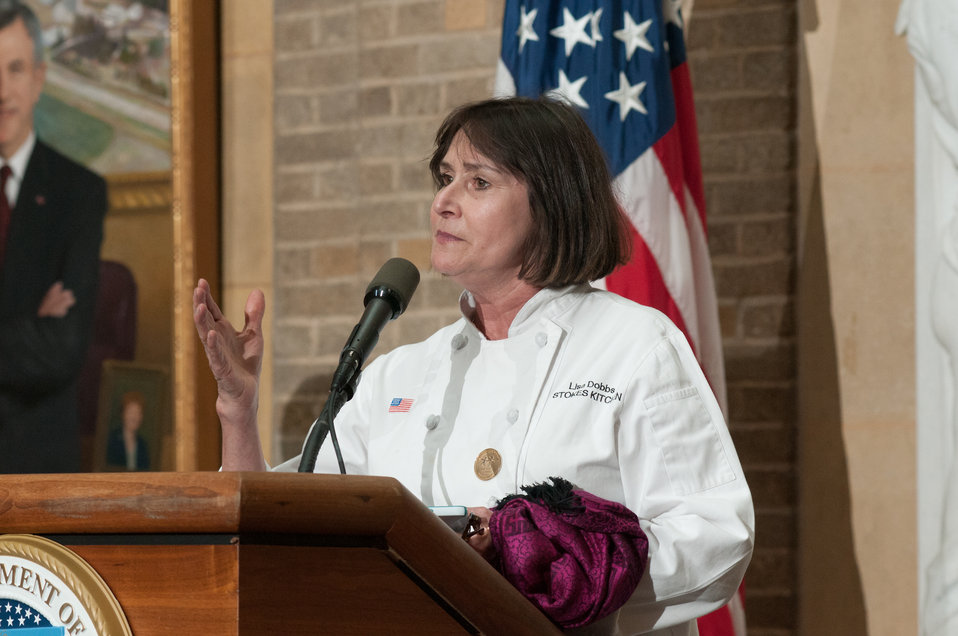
E.W. Stokes Charter School Chef and Nutrition Director Lisa Dobbs talks about what extended shelf life dairy products means to the more than 350 Washington, D.C. students that her staff feeds each school day, and what it means to controlling the operational budget of a cafeteria that cooks everything from scratch at a luncheon with dairy producers, Dairy Management, Inc., (DMI) and other stakeholders from the dairy producers industry, , at the Whitten Building Patio in Washington, D.C. on Tuesday, Feb. 26, 2013.